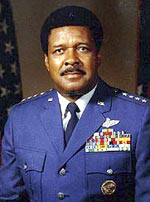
General Daniel 'Chappie' James Jr.

1990's -- Daniel James Jr., was the first African-American promoted to the rank of Air Force four-star general. He was another of the great Tuskegee Airmen, but didn't see action until the Korean War. His career spanned three wars and 30 years, and he was a recognized civil rights pioneer. He was an eloquent speaker for the Air Force known for his thoughts on Americanism and patriotism.